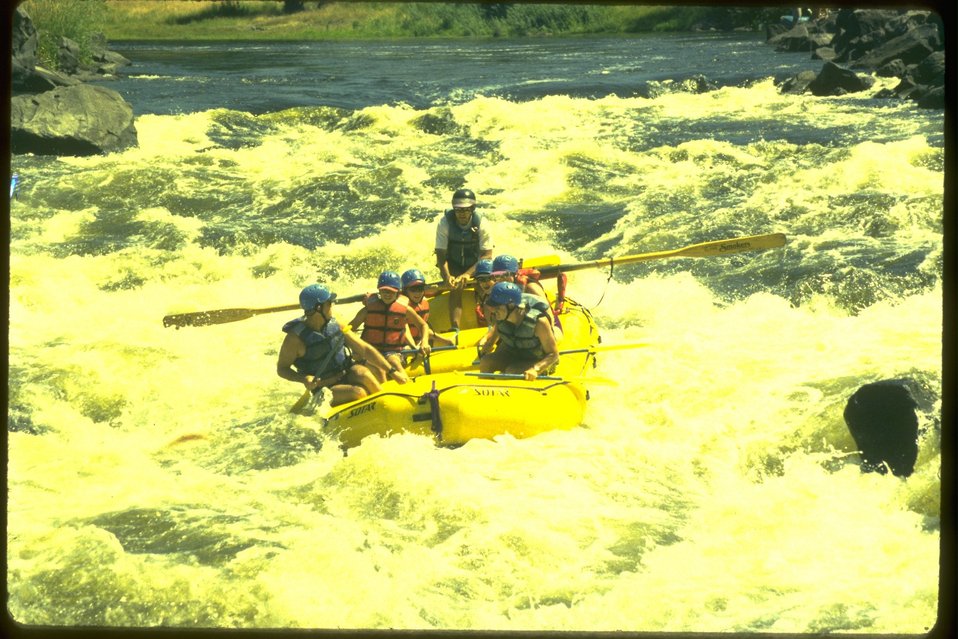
Rafting on the Klamath River.